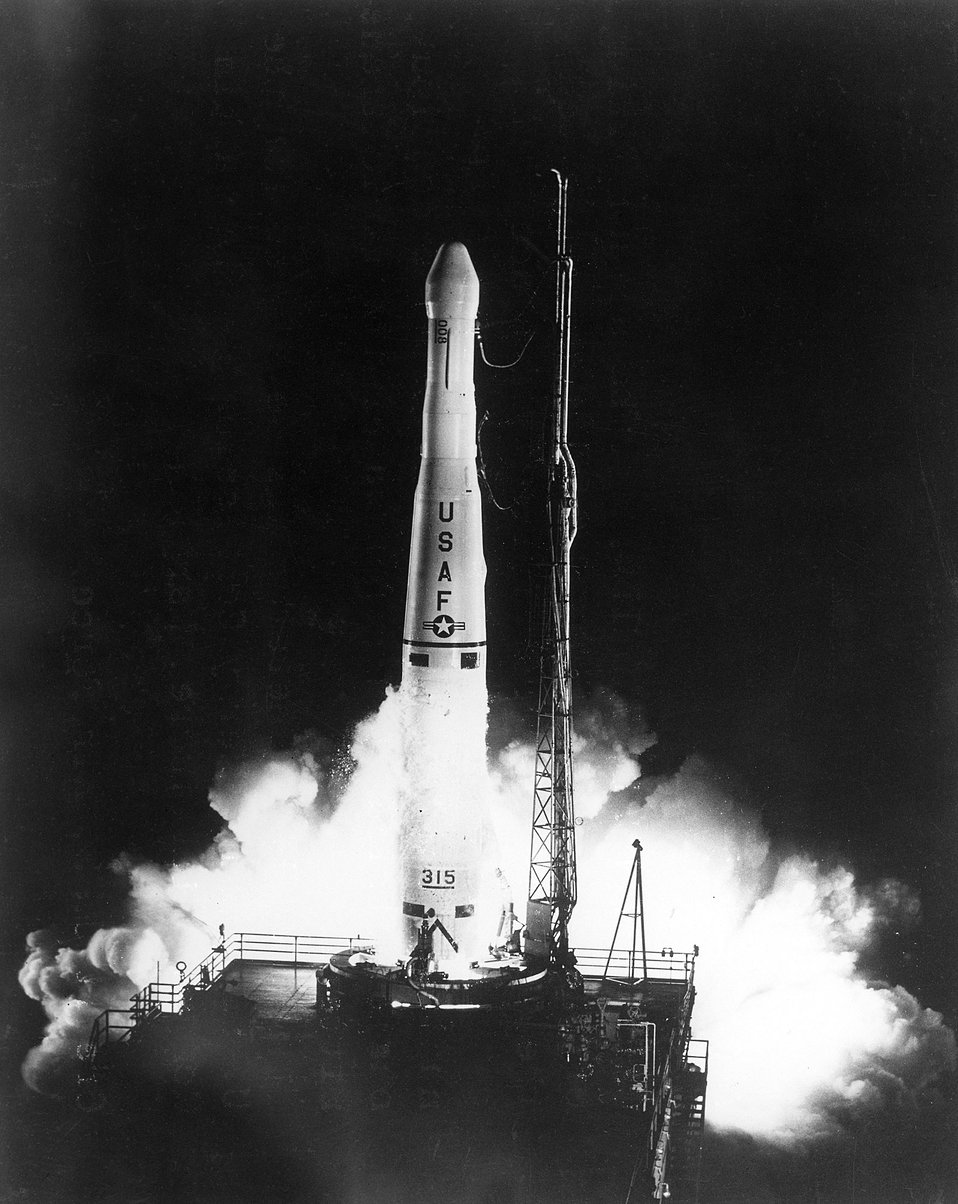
Cape Canaveral, FL....The actual firing of the THOR-ABLE STAR ROCKET that projected the Navy's Navigational satellite into space.